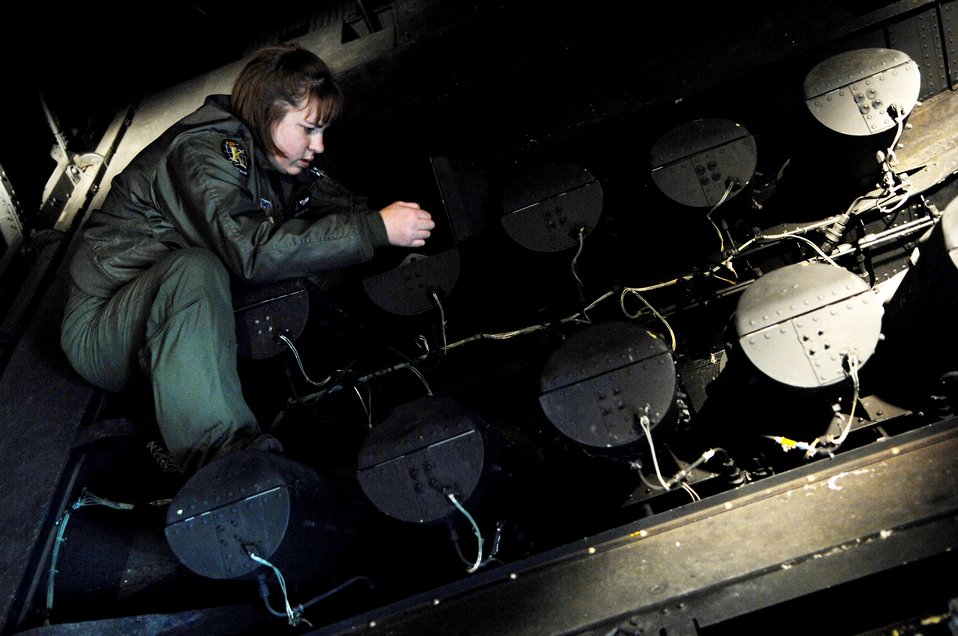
Moody muscle moves mission

Staff Sgt. Rebecca Rhodes checks flares on an HC-130P Combat King Jan. 3 at Moody Air Force Base, Ga. Flares are used to illuminate drop zones and rescue areas during nightime operations. Sergeant Rhodes is a 71st Rescue Squadron loadmaster.